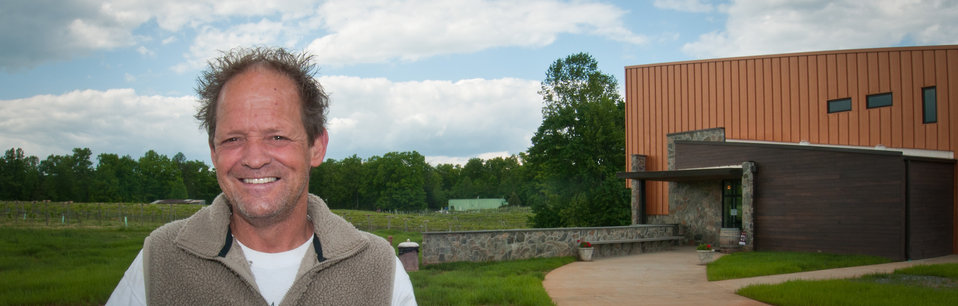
Cooper Vineyards vineyard manager Michael Boone in Louisa, VA, on May 4, 2011, the first winery on the East Coast and the second in the country to be awarded the fourth and highest, Platinum certification by Leadership in Energy and Environmental Design (LEED).
From a Virginia Wine Board Marketing Office press release, “The process of building a LEED platinum certified building was initially more expensive and arduous than co-owners, Jacque Hogge, MD and Geoffrey Cooper, MD expected, but they were able to get financial assistance from the United States Department of Agriculture. “Know that there are grants available to help with the costs of sustainable building projects,” Hogge advises to other potential green wineries. Cooper Vineyards received 2 of the 3 USDA (U.S. Department of Agriculture Rural Development (RD) Rural Energy Financing program) grants awarded in Virginia in 2010 to help with the expenses of their construction.”
Rural Energy Financing program focuses on loan guarantees, loans and grants to agricultural producers, businesses, cooperatives and rural residents for renewable energy systems and to make energy efficiency improvements.
The tasting room and building collects rainwater from the roof; uses low flow water fixtures to reduce usage by 40%; utilizes structurally insulated panels for the roof and walls; heats and cools the entire building using a geothermal system that includes pipes that are embedded in the parking lot; low-voltage LED lighting with daylight and occupancy sensors provide ample light when it is needed; a solar panel array provides more than 15% of the energy needs for the building, and much of the construction materials are from local and recycled material sources. For more information about USDA please go to www.usda.gov, Rural Development and Rural Energy Financing. LEED was developed by the U.S. Green Building Council (USGBC) is a 501 c3 non-profit organization committed to a prosperous and sustainable future for our nation through cost-efficient and energy-saving green buildings.